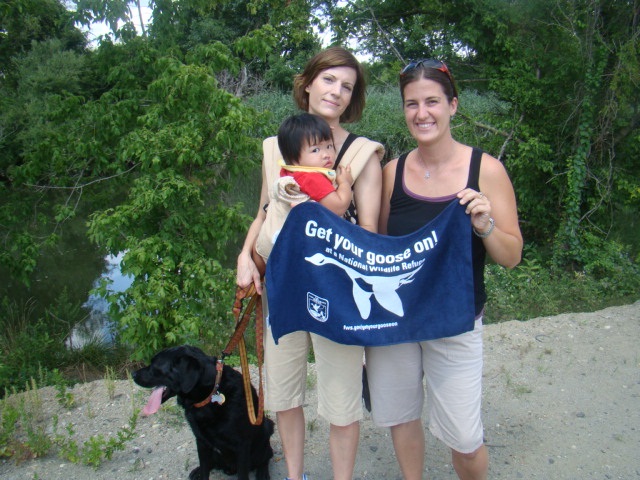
Get Your Goose On!

GYGO! at John Heinz National Wildlife Refuge.